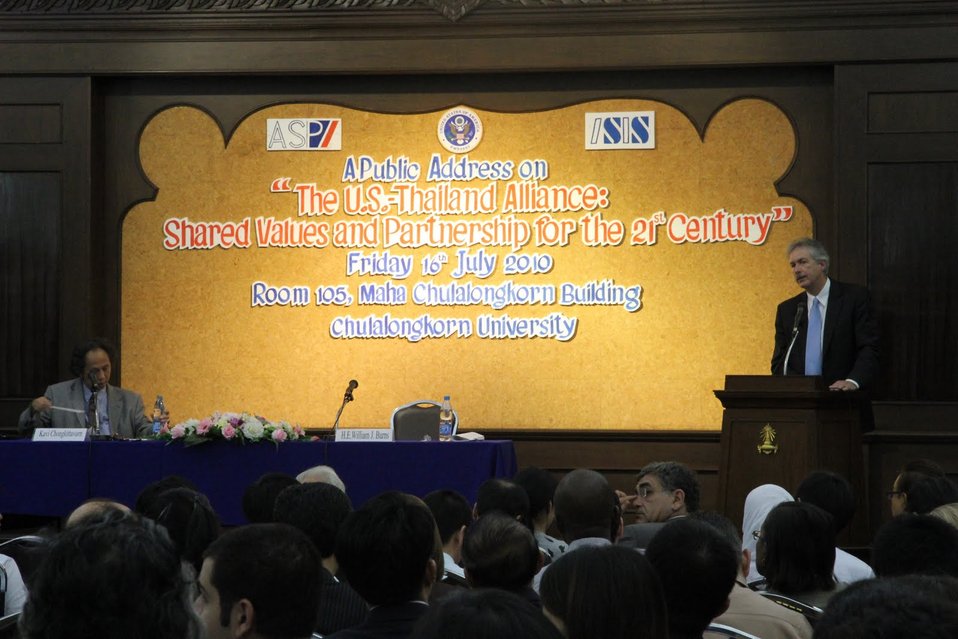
Under Secretary Burns Delivers Remarks

U.S. Under Secretary of State William J. Burns delivers remarks at the Maha Chulalongkorn Building of the Faculty of Arts, Chulalongkorn University, in Bangkok, Thailand, on July 16, 2010.